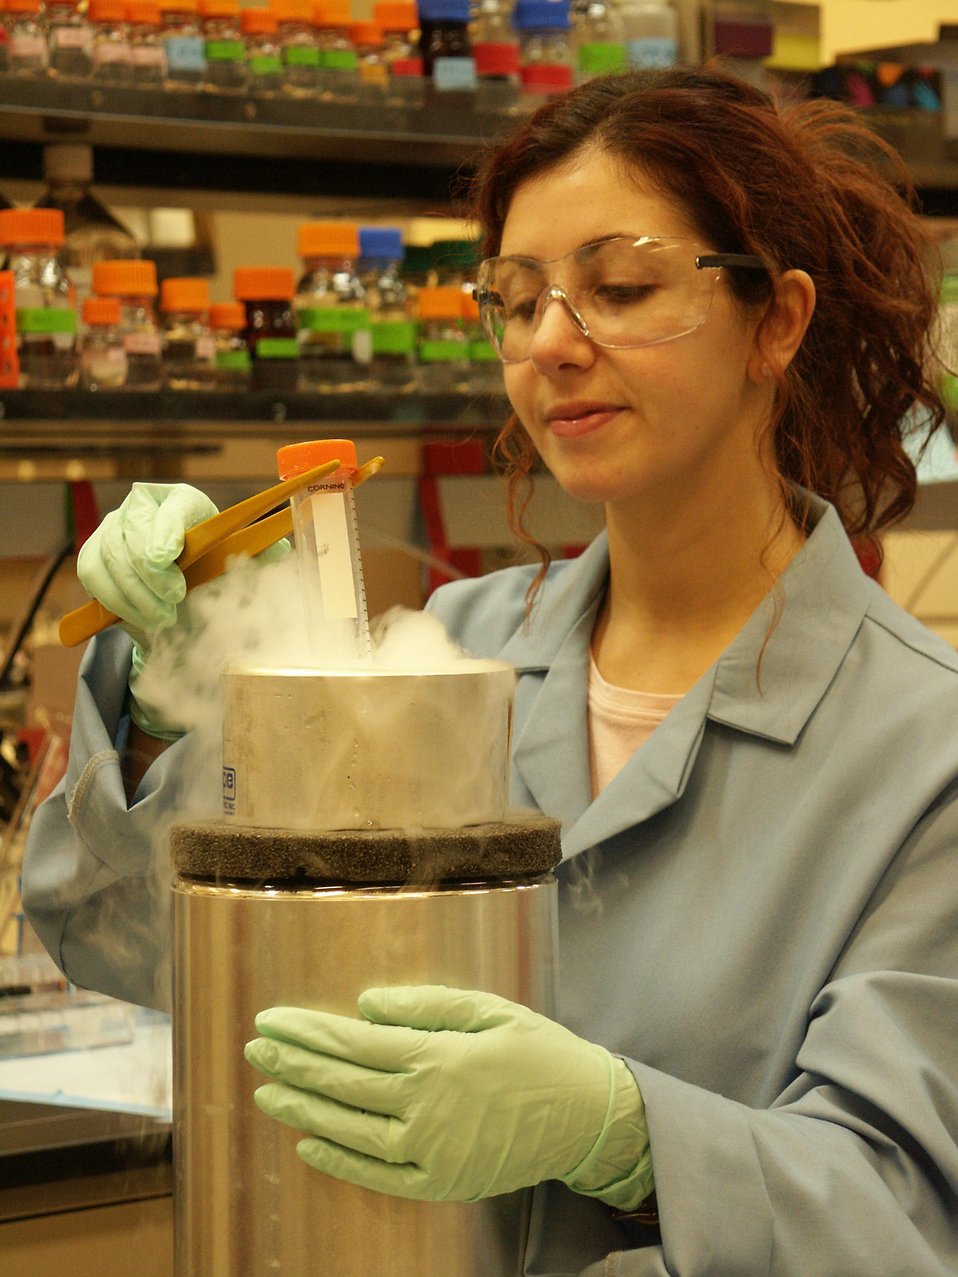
AT THE ENVIRONMENTAL MOLECULAR SCIENCES LABORATORY AT PNNL, A SCIENTIST WORKS ON FREEZING DOWN A MIXTURE OF UNKNOWN PROTEINS, TAKEN FROM BREAST TUMOR CELLS.

ADVANCED MASS SPECTROMETERS WILL FIND, IDENTIFY, AND ANALYZE THE PROTEINS OF TUMOR CELLS RESISTANT TO KNOWN THERAPIES.